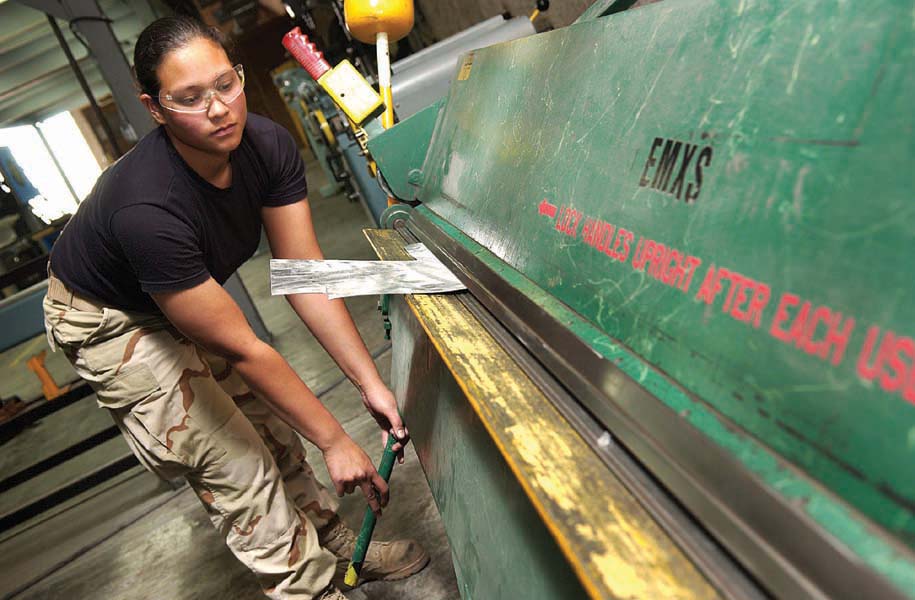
Airman keeps Air Force structures intact

SOUTHWEST ASIA -- Senior Airman Sheri Wilson bends metal for an aircraft repair job at a forward-deployed location here recently. She is an aircraft structural maintenance journeyman assigned to the 379th Expeditionary Maintenance Squadron and deployed from Dyess Air Force Base, Texas.